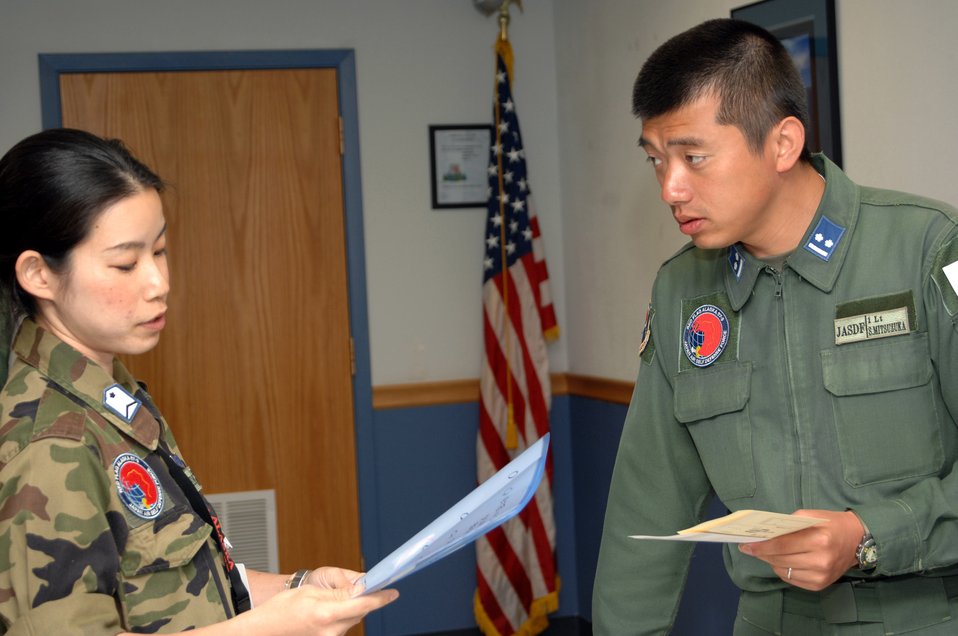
Japanese absentee voting at Red Flag-Alaska

The members of the Japan Air Self-Defense Force's 7th Air Wing, at Eielson Air Force Base, Alaska, to participate in Red Flag-Alaska 07-3, were able to vote in their country's official elections July 23rd at an absentee voting area set up on the base.